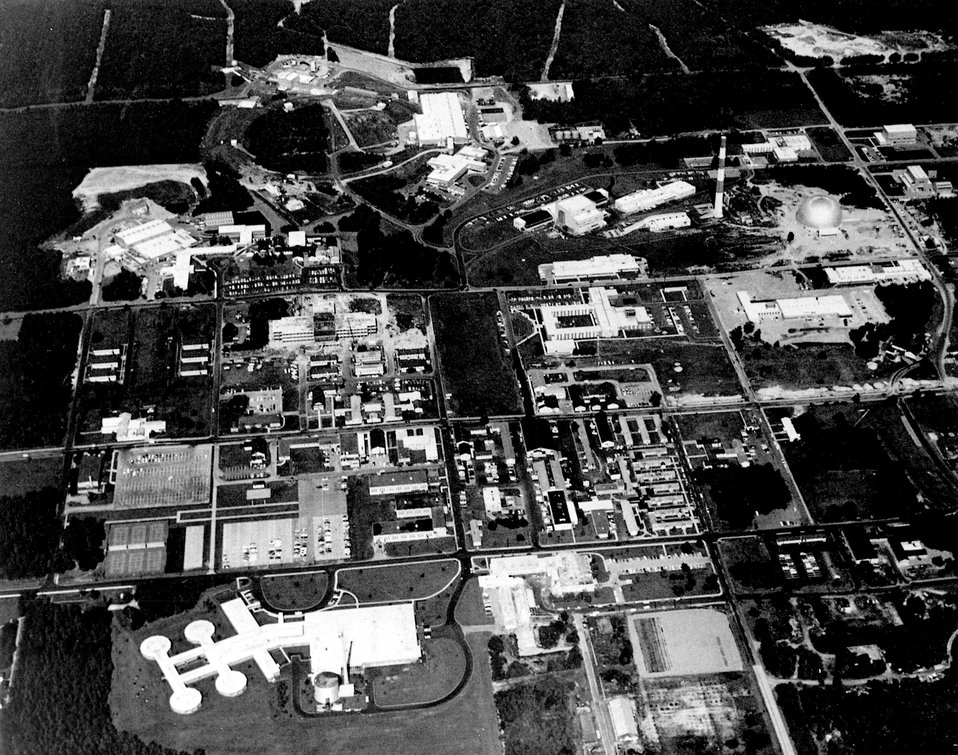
Aerial view of Brookhaven National Laboratory.